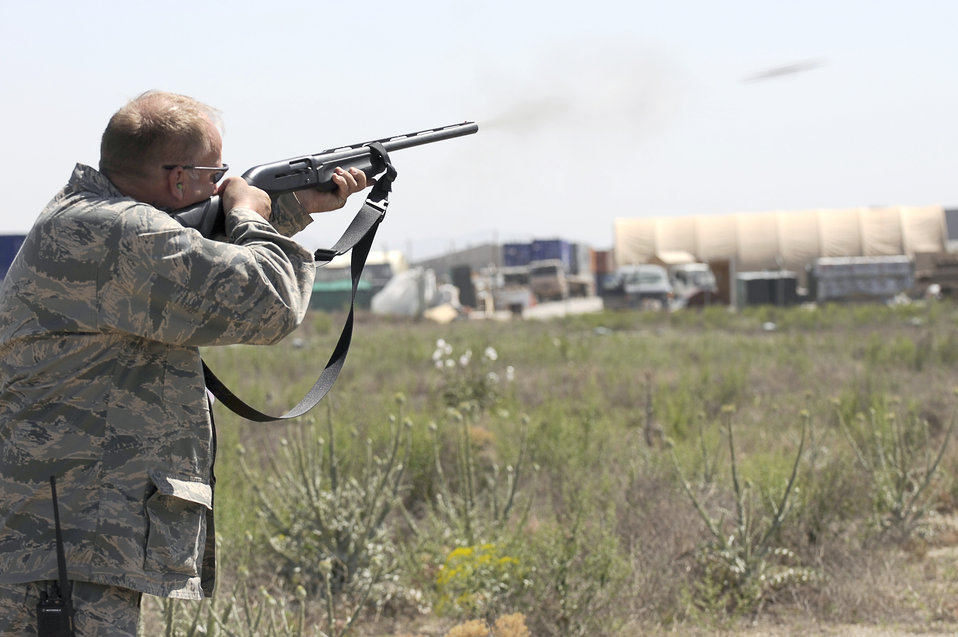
Afghan falconers and Airmen keep airfield safe

Todd Grimm fires his shotgun at birds flying near the flightline, May 20, 2010, at Bagram Airfield, Afghanistan. Mr. Grimm is a wildlife biologist with the U.S. Department of Agriculture, Wildlife Service program, working with the 455th Air Expeditionary Wing Safety Office to keep wildlife from interfering with flying operations.